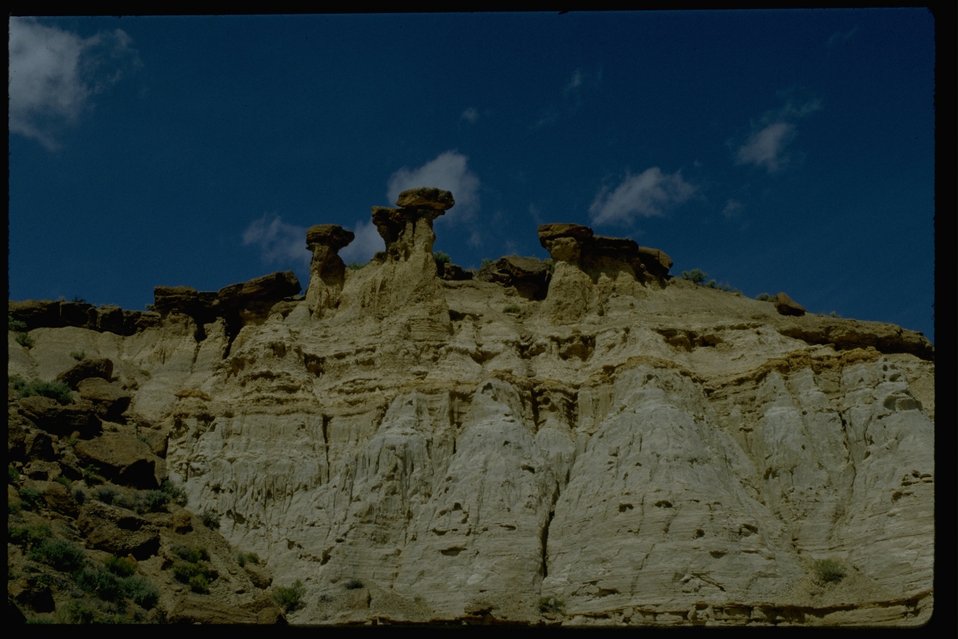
Hawksie-Walksie" on the east side of Hawk Mountain. OR 1-146.